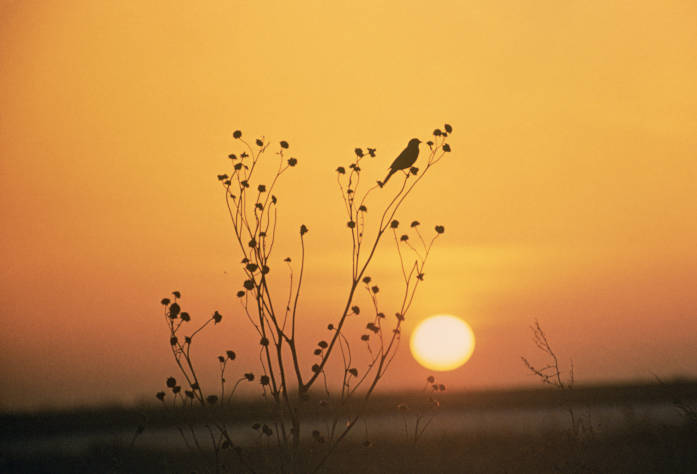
Sunset at Tewaukon National Wildlife Refuge in North Dakota.